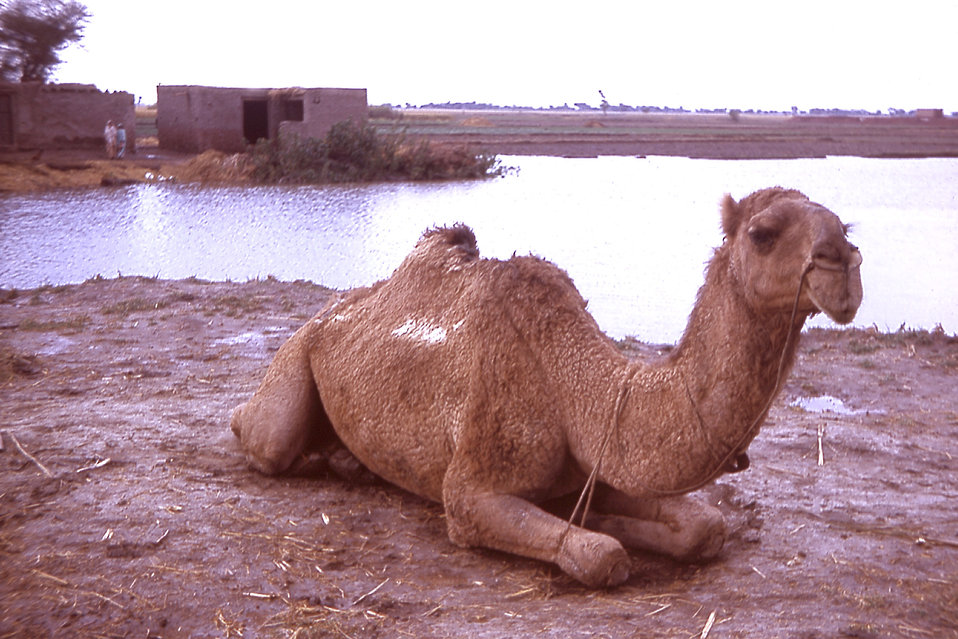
In this photograph, a camel relaxes near a village in the state of Gujarat, India.